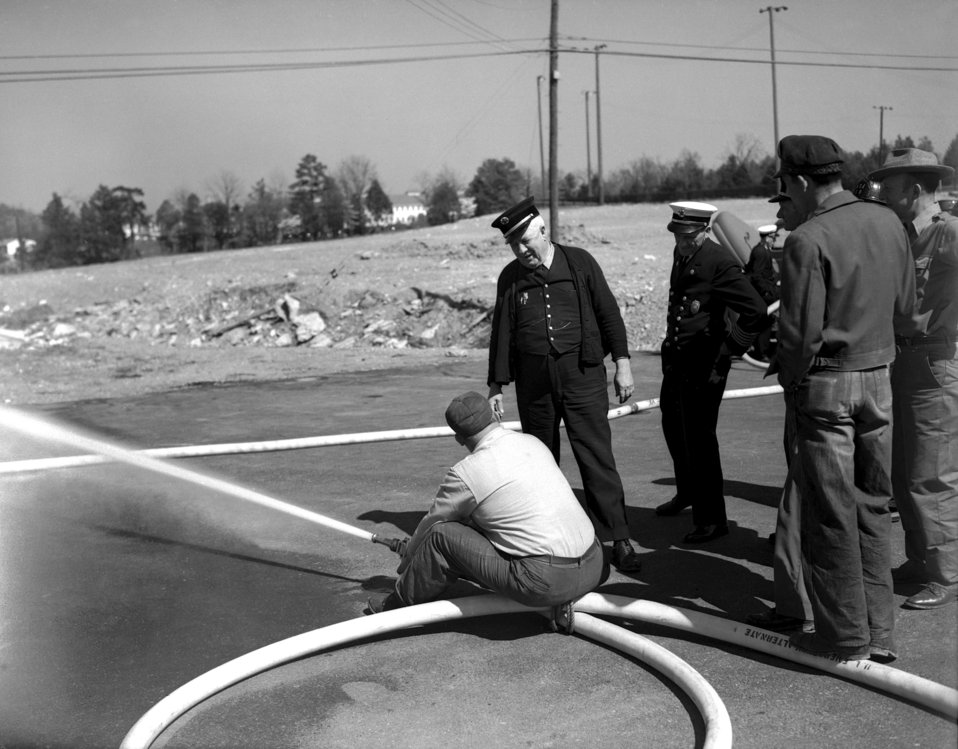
Fire Training School Oak Ridge

4454-14 DOE Photo by Ed Westcott

Oak Ridge Tennessee 4/28/1948